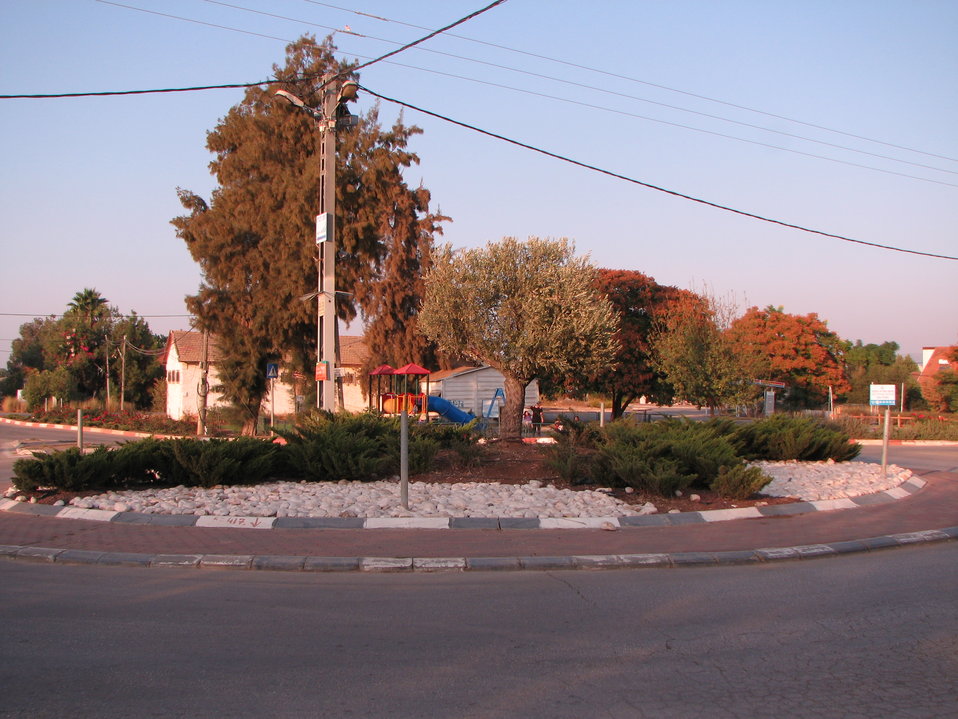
עברית: מרכז חבר